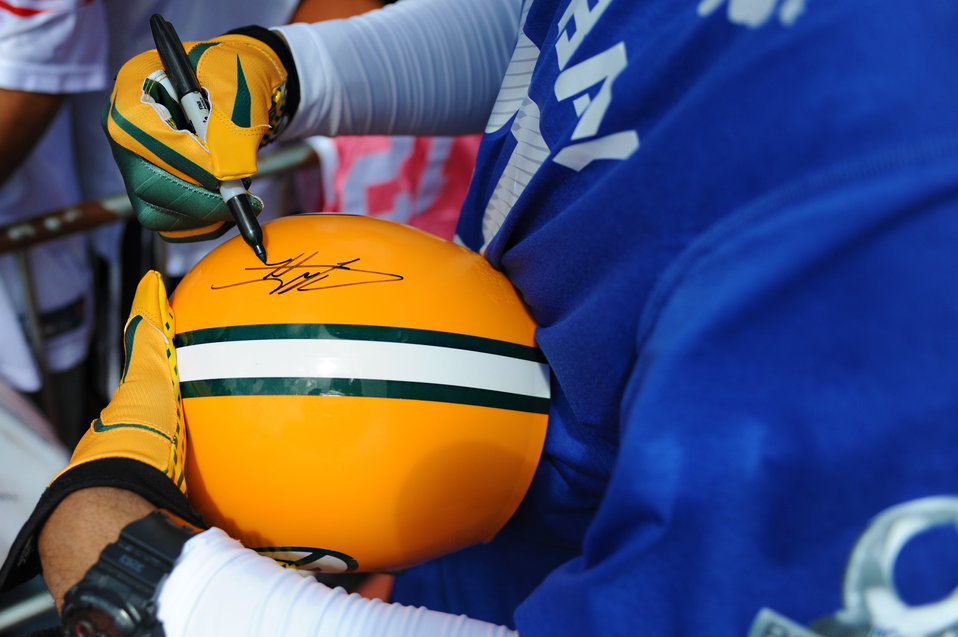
Sign here

Charles Woodson, a Green Bay Packers cornerback, signs a Packers helmet for a fan during the autograph session of the Pro Bowl practice at Earhart Field on Joint Base Pearl Harbor-Hickam, Hawaii, Jan. 26, 2012. Woodson is the 1997 Heisman Trophy winner from the University of Michigan.